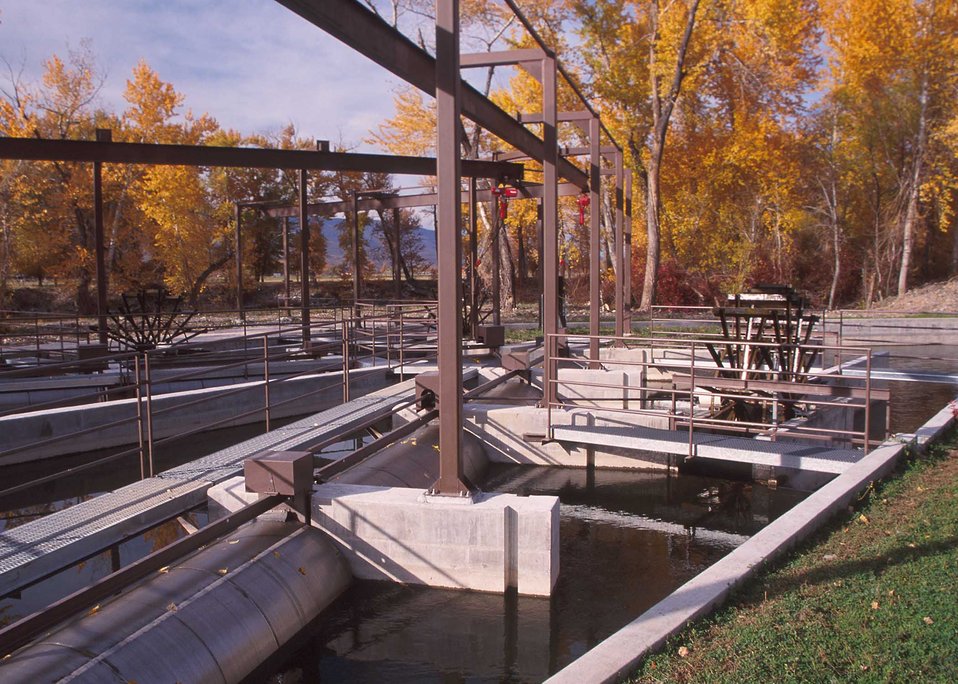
Close up of permanent diversion structure and fish screen installed on the Salmon River as part of salmon recovery work in the Salmon Model Watershed.